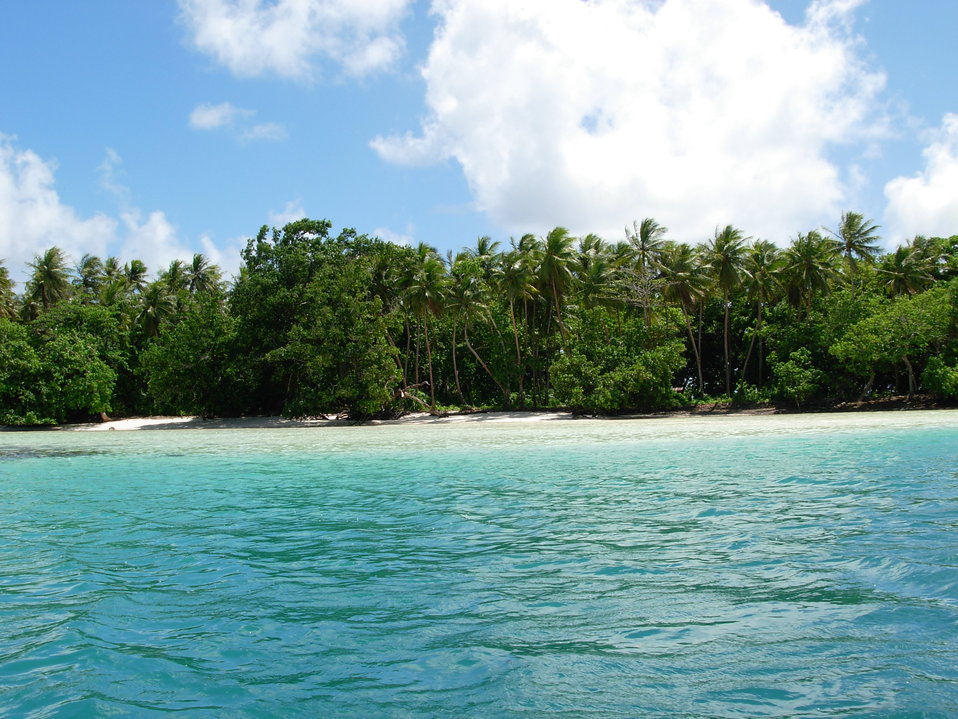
A view of tropical foliage coming right down to the white sand beach of Pohnpei.